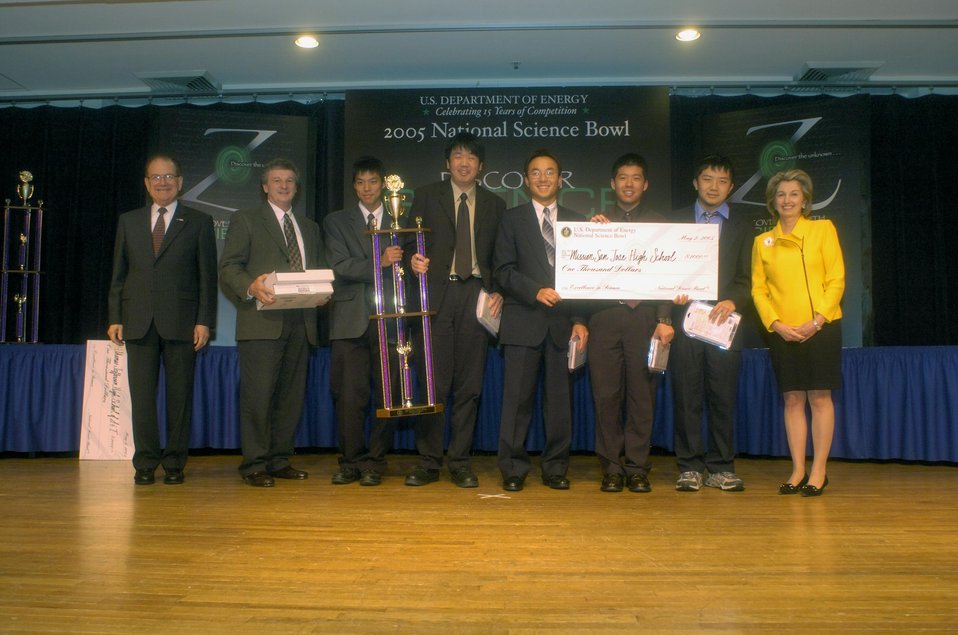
THE 2005 NATIONAL SCIENCE BOWL SECOND PLACE WINNING TEAM, MISSION SAN JOSE HIGH SCHOOL, FREMONT, CA, HOLDING THEIR TROPHY AND $1,000.00 CHECK FOR THEIR SCHOOL.

WITH THE TEAM ON THE LEFT IS RAYMOND ORBACH, DIRECTOR, DOE OFFICE OF SCIENCE, AND THE RIGHT IS MRS. SAMUEL BODMAN, WIFE OF THE SECRETARY OF ENERGY. DOE CREATED THE NATIONAL SCIENCE BOWL IN 1991 TO ENCOURAGE HIGH SCHOOL STUDENTS TO EXCEL IN MATH AND SCIENCE AND TO PURSUE CAREERS IN THESE FIELDS. OVER 300 SENIOR HIGH SCHOOL STUDENTS, CHAMPIONS FROM 63 REGIONAL COMPETITIONS ATTENDED THE 2005 EVENT. THIS TEAM ALSO WON A TWO WEEK TRIP TO AUSTRALIA TO ATTEND THE INTERNATIONAL SCIENCE SCHOOL.